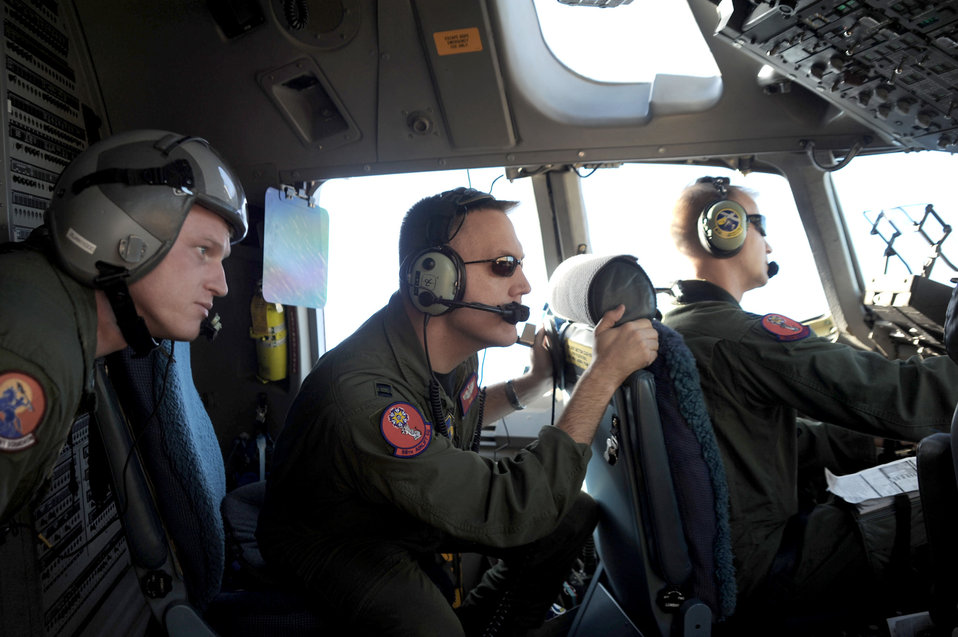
Altus C-17s fly during MAFEX mission PB

Tech. Sgt. Chad Turner (from left), Capt. Bryan Bailey, and Capt. Ryan Goodlin search for simulated surface-to-air missles during a Mobility Air Force Exercise Nov 18, 2010, near Nellis AFB, Nevada. The MAFEX is a bi-annual, Air Force-wide training opportunity hosted by the Air Force Weapons School there. The three Airmen are from the 58th Airlift Squadron.